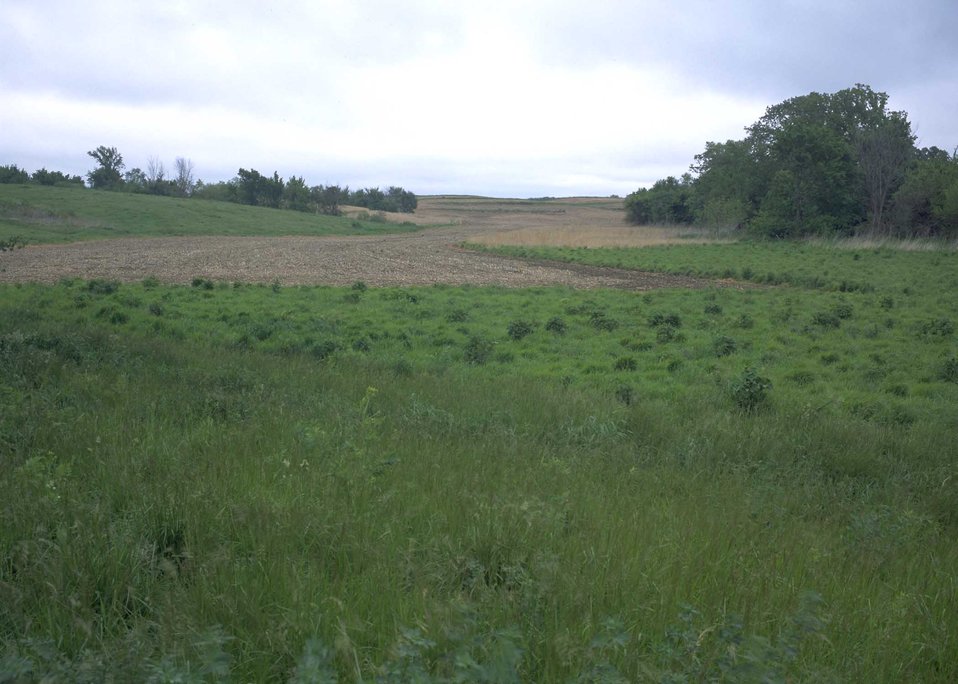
Many areas of the Peoria County, Illinois farm are protected with conservation practices that not only protect the soil and water resources on the site, but provide a wide variety of habitat environments for wildlife.